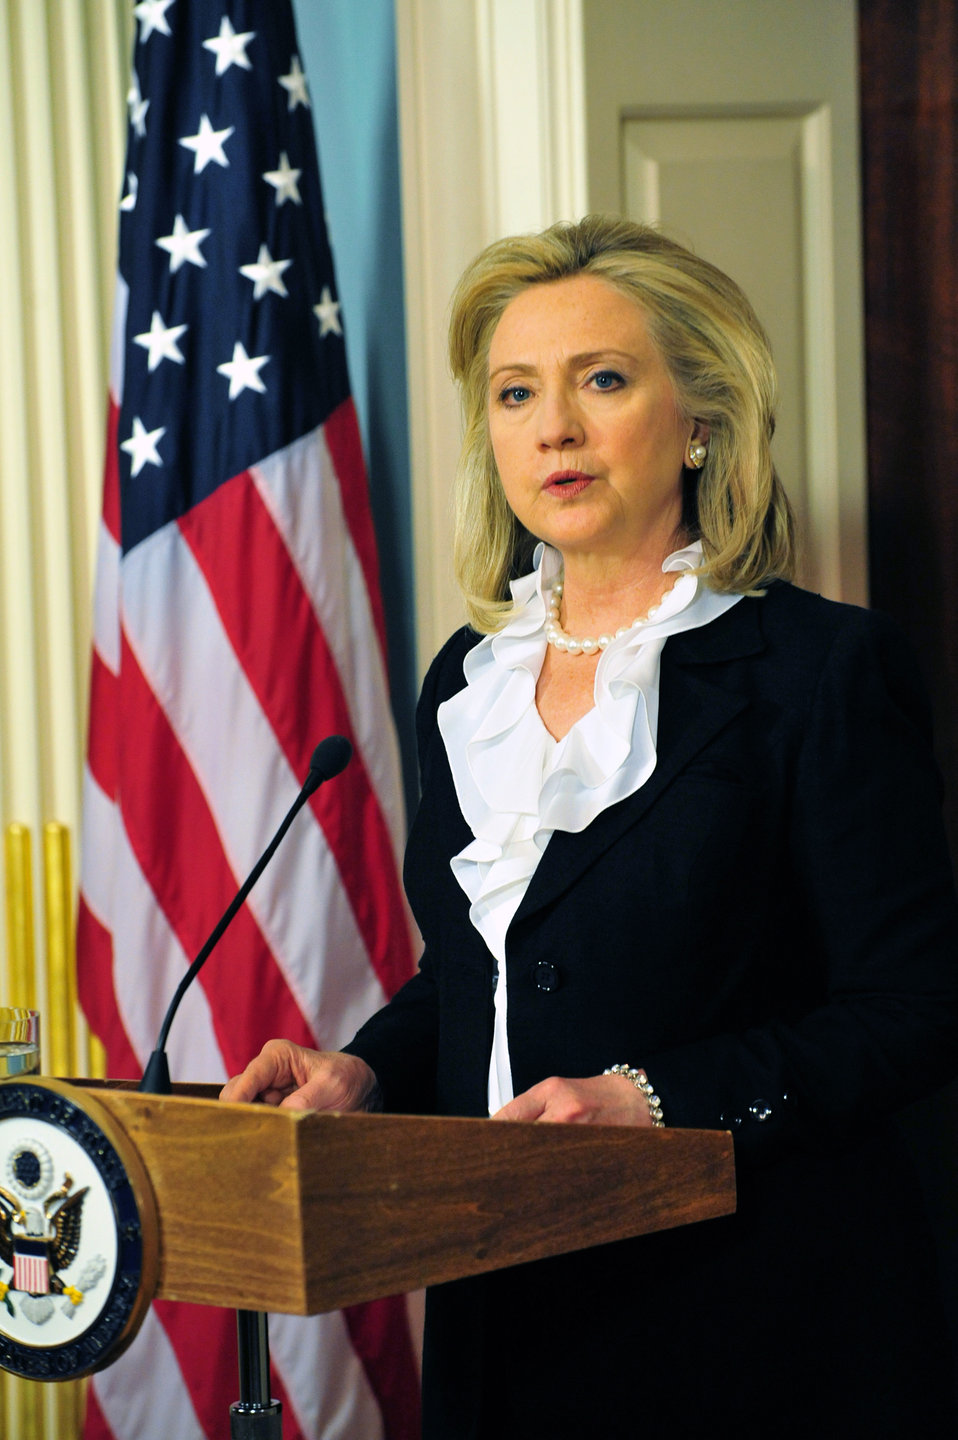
Secretary Clinton Delivers a Statement on Syria

U.S. Secretary of State Hillary Rodham Clinton delivers a statement on Syria, at the U.S. Department of State in Washington, D.C., on August 18, 2011.